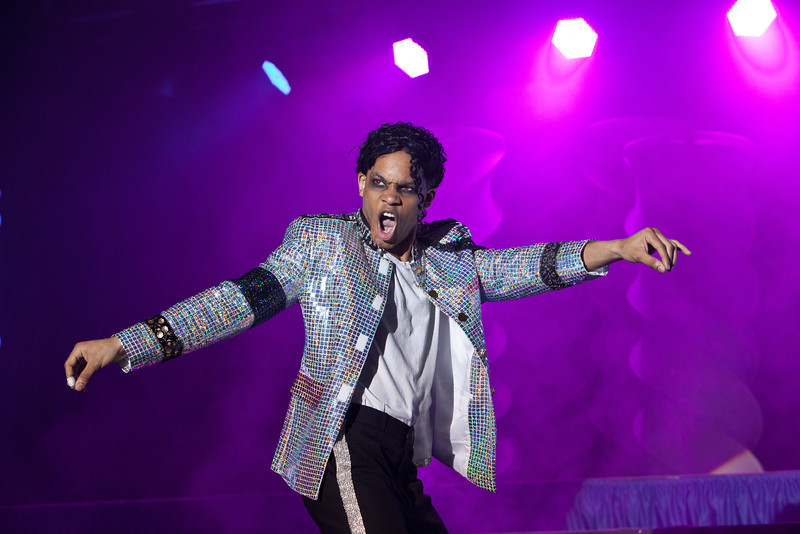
Remember the time

Staff Sgt. Tyron Jones from Yokota Air Base, Japan, thrills the audience while impersonating Michael Jackson during his specialty performance at the 2012 Air Force Worldwide Talent Search at Lackland Air Force Base, Texas, Jan. 15, 2012. Jones won best in show for the competition, which took place Jan. 9-16. The annual competition helps select members for the expeditionary entertainment group,Tops in Blue.